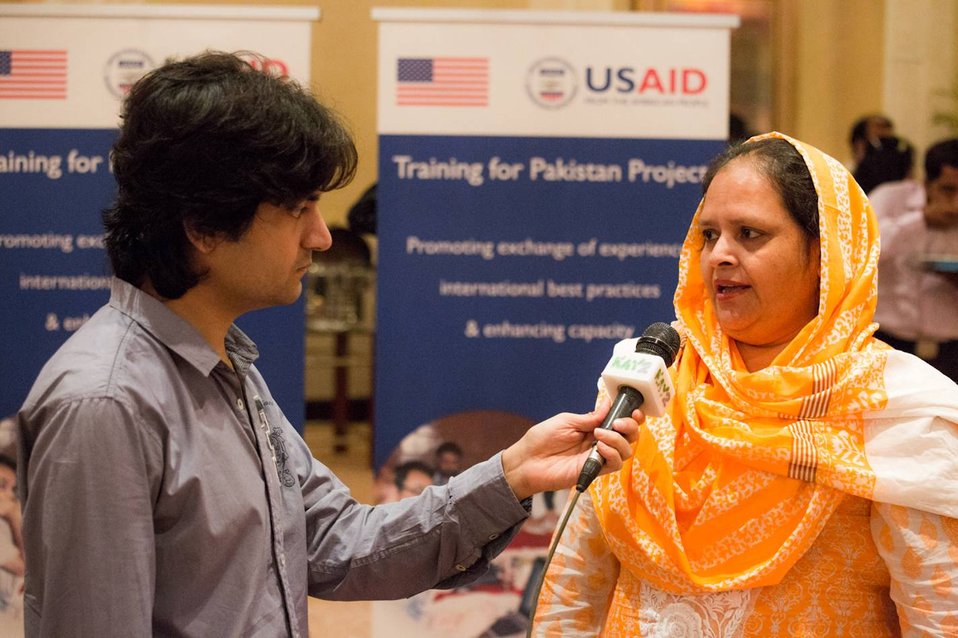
US-funded Study Tour Offers New Ideas for Addressing Gender-Based Violence

Islamabad, September 6, 2012 - Dr Atifa Naheed, Associate Professor at King Edward Medical University, talks to a media representative.